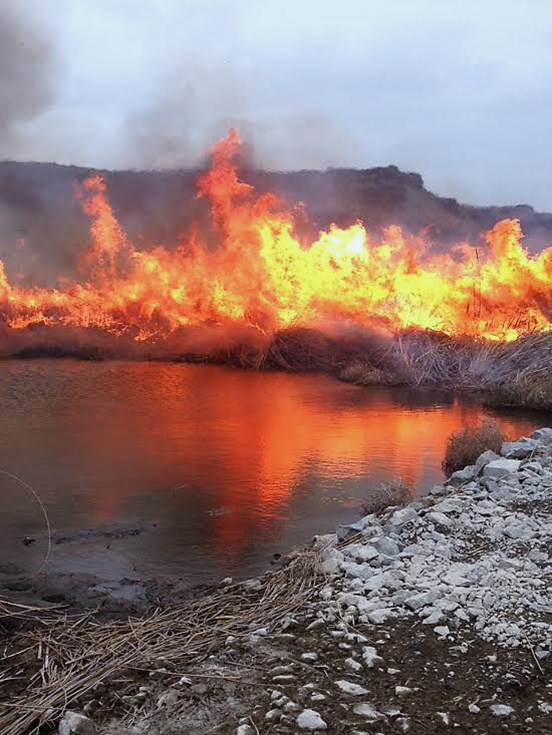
Marsh Restoration

Riparian habitats in the arid West have been severely modified and degraded and are important in maintaining biological integrity in most western eco-regions. Intact riparian areas are one of the least represented habitat types in the steppe region of eastern Washington. Prescribed fire is utilized in the marsh habitat, here, on the Refuge to aid in reducing exotic plant species and dense emergent vegetation, recycling nutrients in the soil, and creating structural diversity to support greater productivity and species diversity.